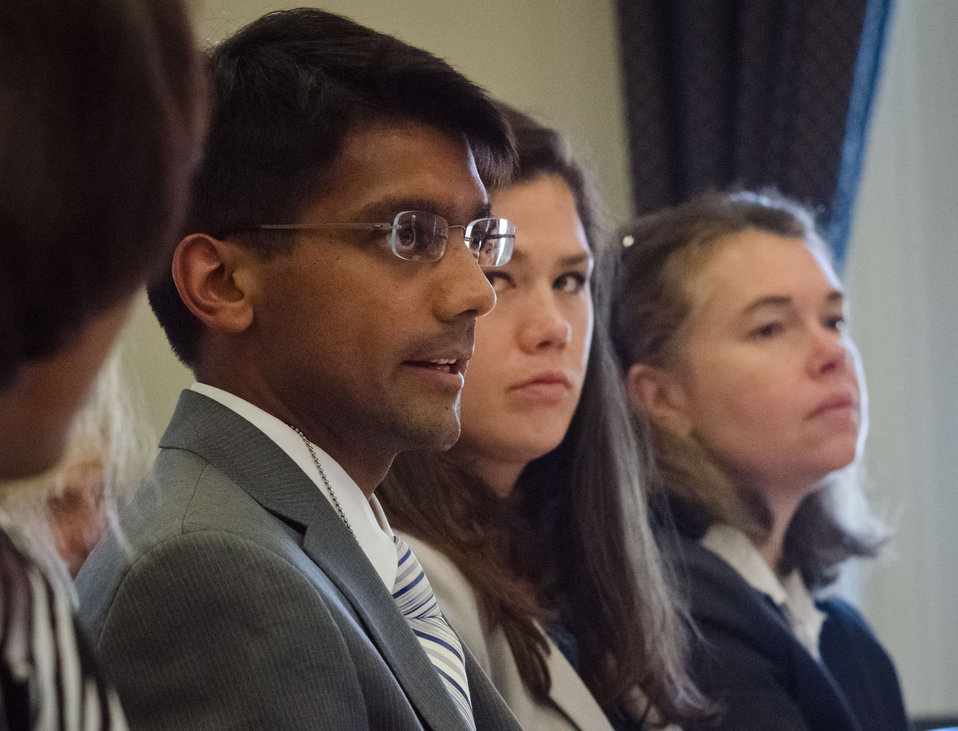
White House Fellow with Veterans Administration Dave Chokshi speaks during the White House Rural Council chaired by Agriculture Secretary Tom Vilsack at the White House in Washington, D.C. on Friday, Oct. 5, 2012. The White House Rural Council discusses recent White House announcements and Secretary Vilsack asked council members to outline their work plan for the coming months.